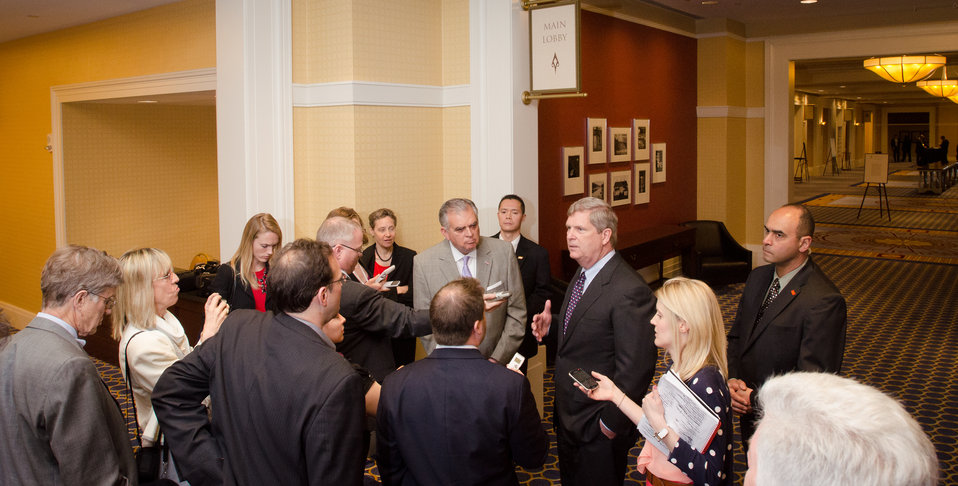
Agriculture Secretary Tom Vilsack (right) and U.S. Department of Transportation (DOT) Secretary Ray LaHood meet with reporters after the announcement today that the U.S. Department of Agriculture (USDA) is extending for five years its agreement to work with the Federal Aviation Administration (FAA) and other partners to help develop a viable biofuel for the aviation industry. The Secretary signed the agreement with U.S. Department of Transportation (DOT) Secretary Ray LaHood at the Advanced Biofuels Leadership Conference at Gaylord National Harbor in Maryland on Monday, April 15, 2013.